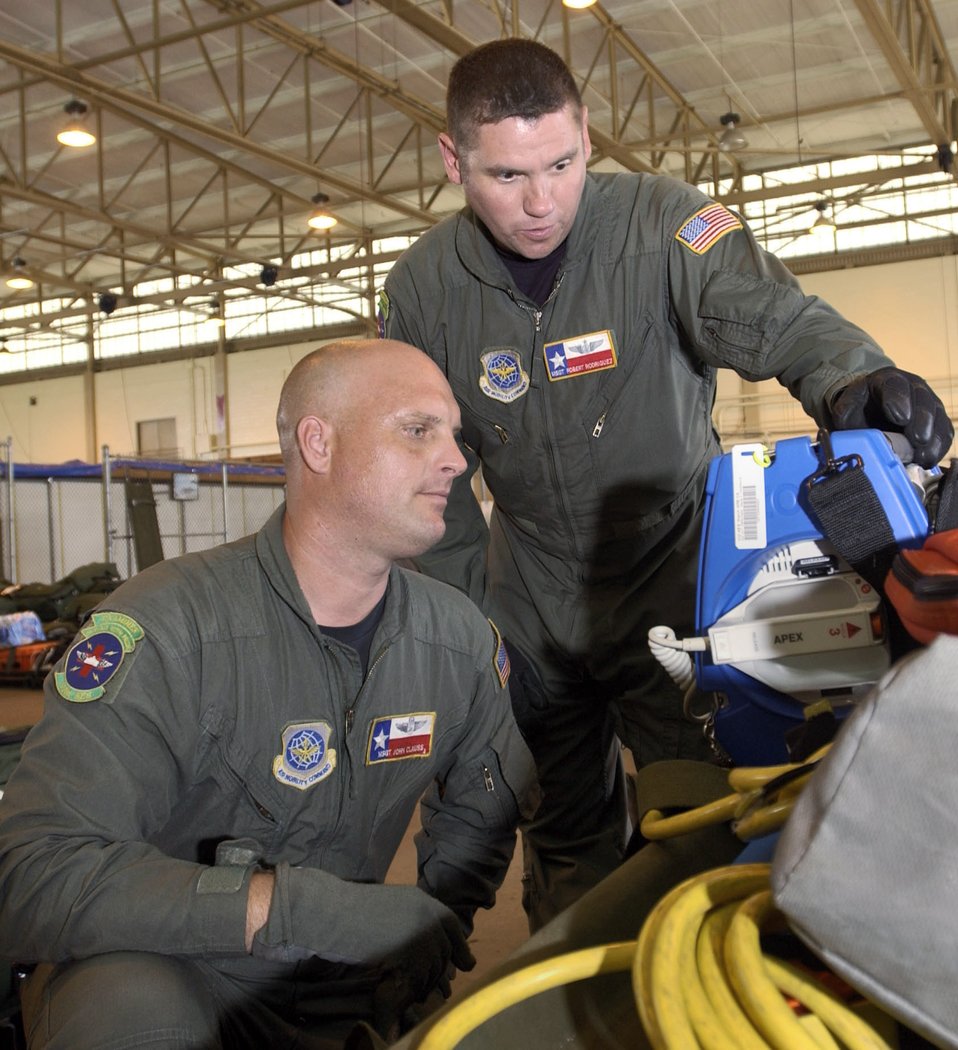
Reservists charge into aeromedical evacuation effort

SAN ANTONIO -- Master Sgts. John Clauss (left) and Rob Rodriguez perform an operational check-up on a defibrillator. The two flying medics helped aeromedical evacuation teams organize and load their equipment for flights. They are with the 433rd Airlift Wing at nearby Lackland Air Force Base.